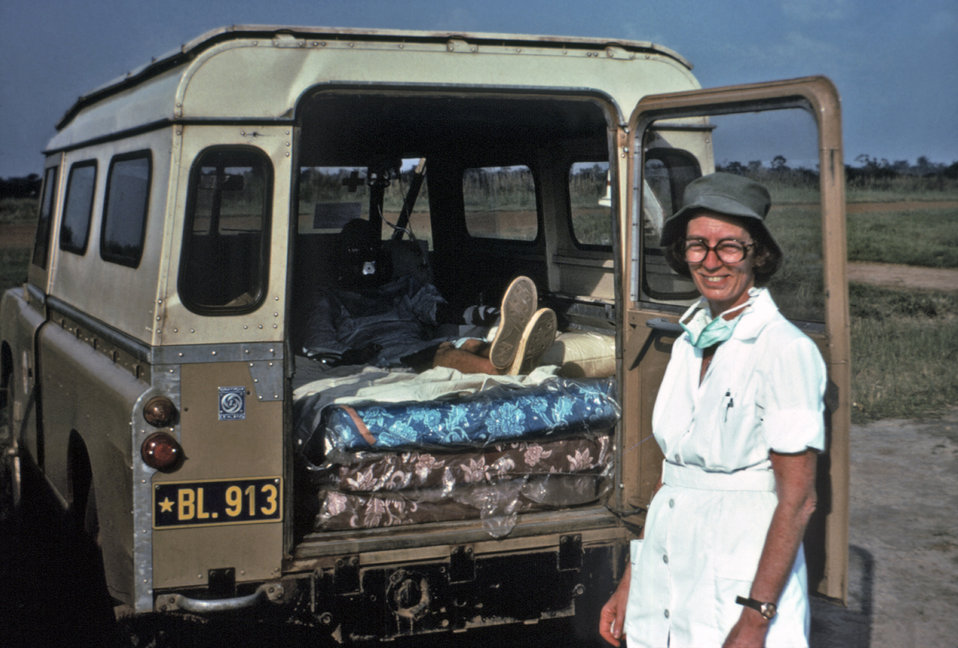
This 1976 photograph, taken on an airfield in Bumba, Zaire, showed Dr. Margaretha Isaacson in the foreground, while suspected Ebola patient Del Conn, was lying in the back of his transport, evacuation vehicle.